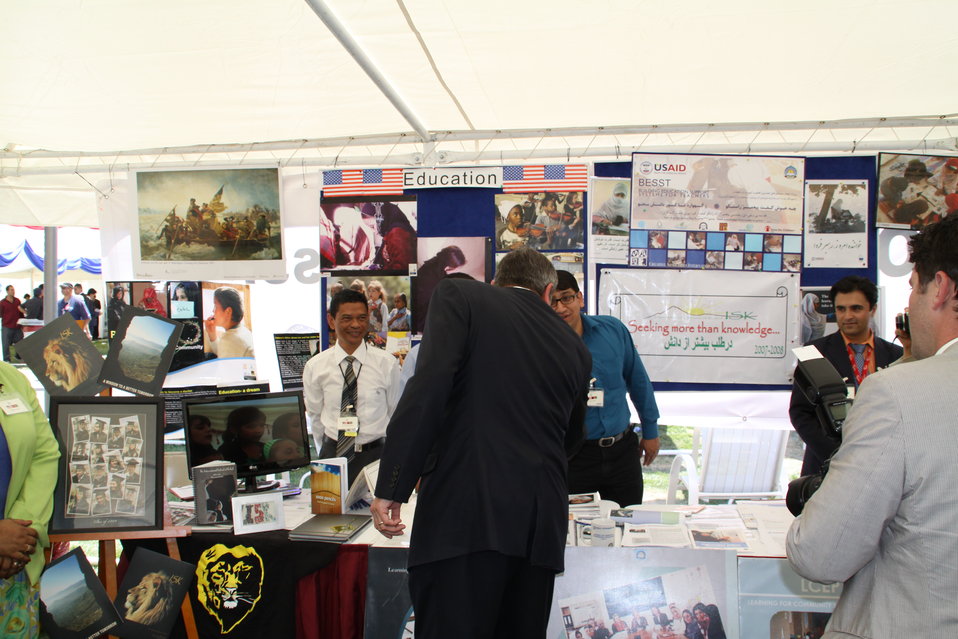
Kabul Official July 4th Celebration